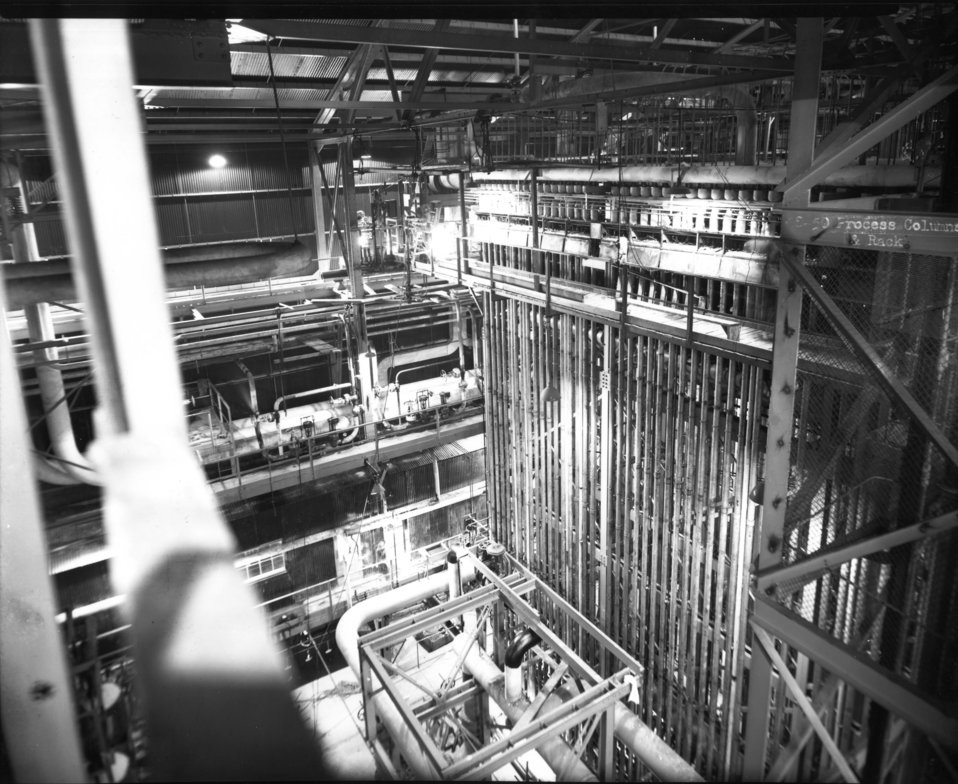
Schools at Oak Ridge